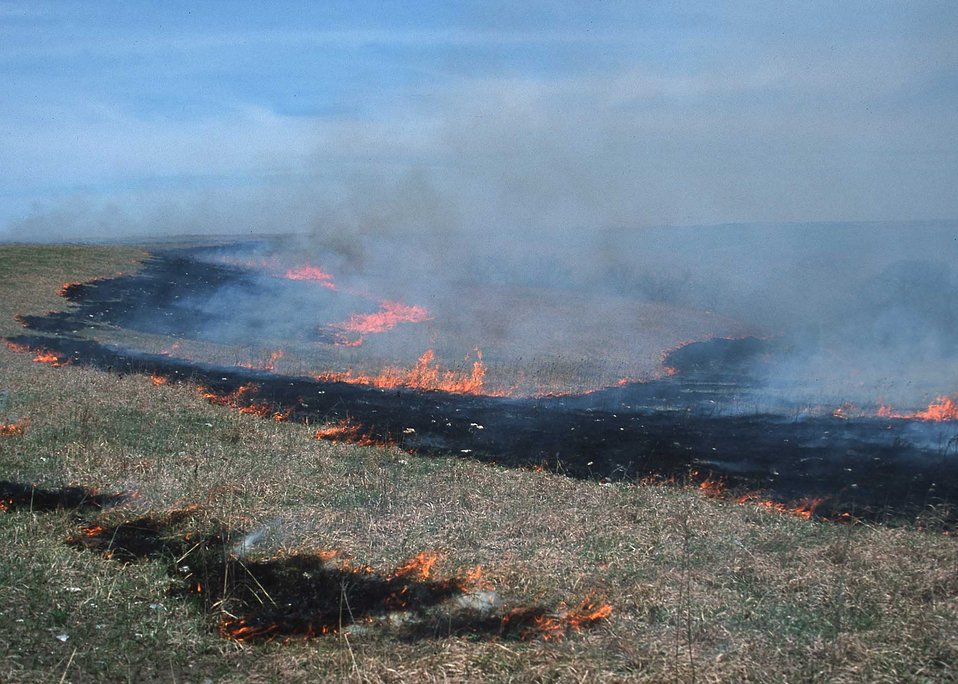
Prairie burn to stimulate new growth and recycle nutrients. Konza Biological Research Station, Manhattan, KS.